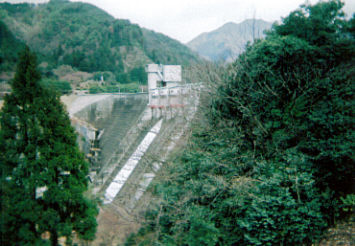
Dam